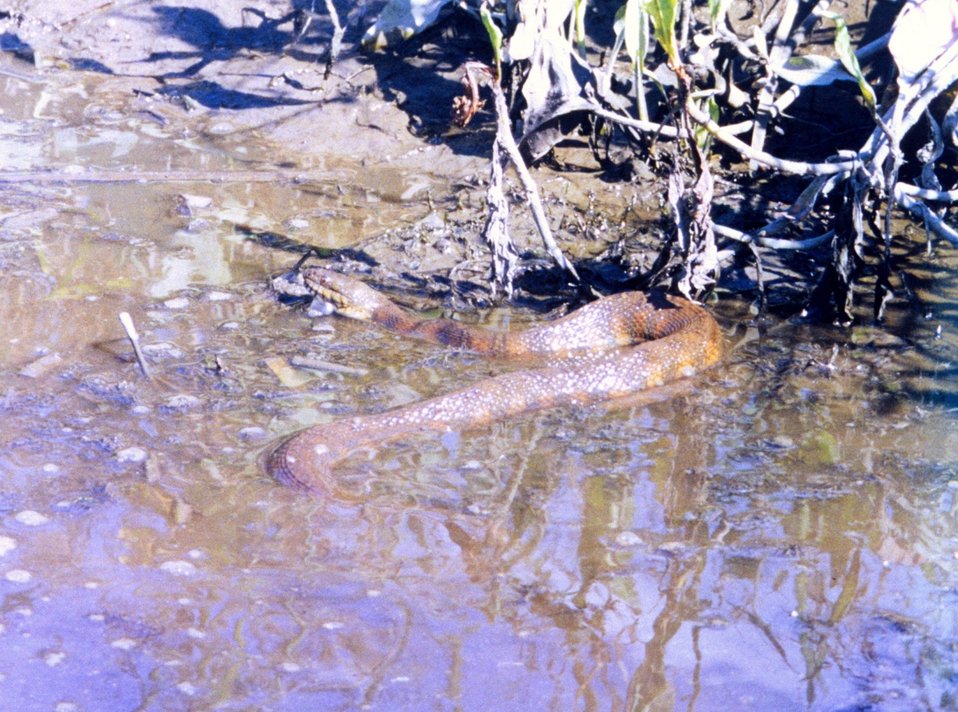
A Northern Water Snake basking along the river bank in early fall.